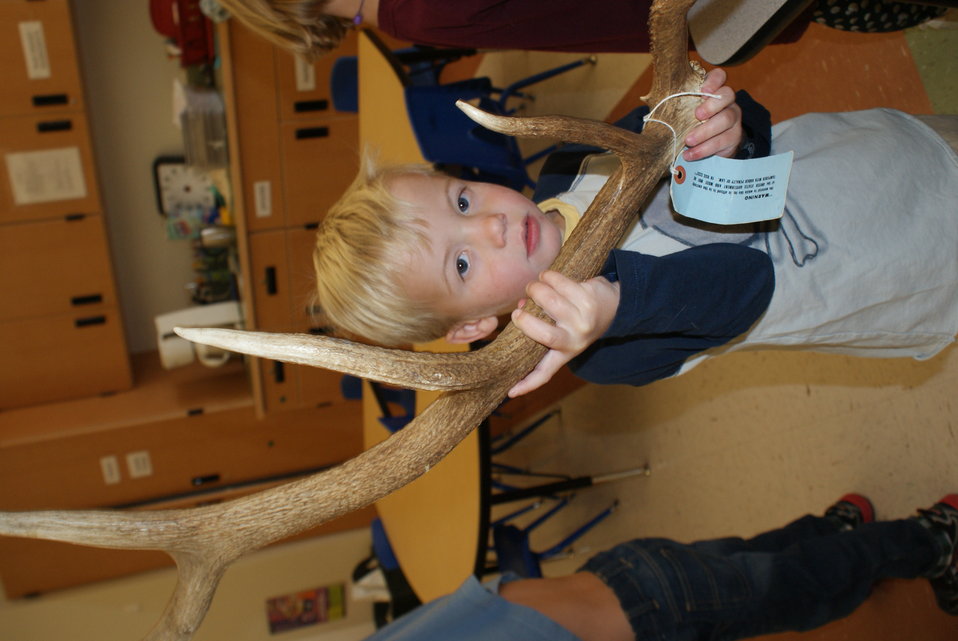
Scientists in the Community Program

U.S. Fish and Wildlife Service Mountain-Prairie Region Deputy ARD for External Affairs, Matt Kales, introduces early childhood education students at William Roberts Elementary School in Denver to some of Colorado's native and historic wildlife species.